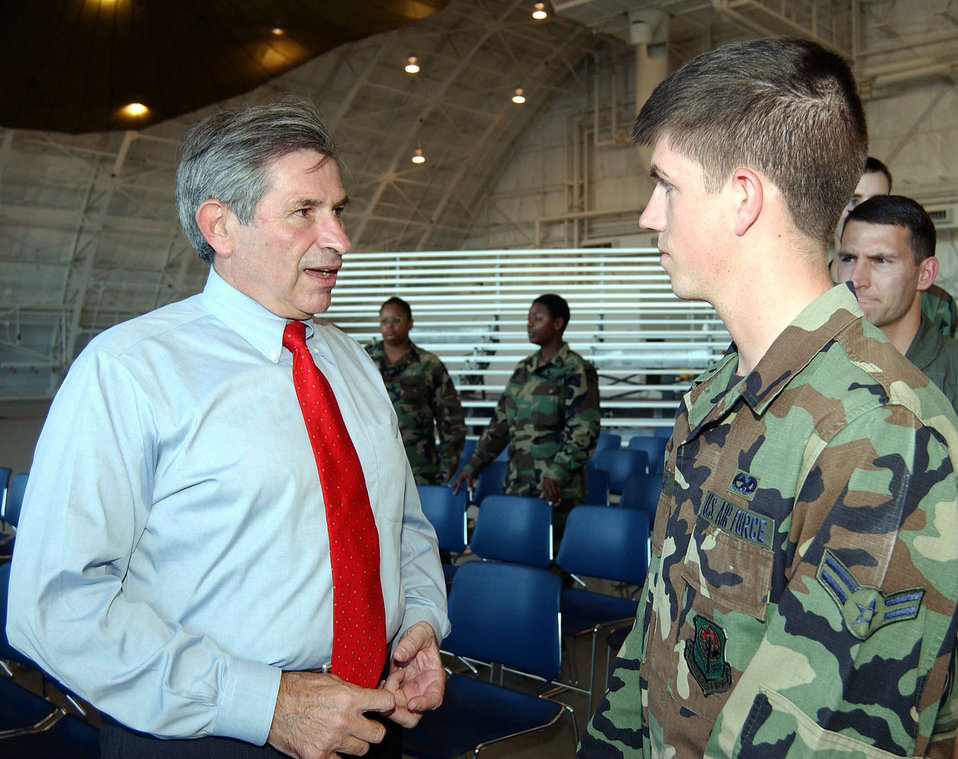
Talking about the issues

MCCHORD AIR FORCE BASE, Wash. -- Airman 1st Class John Harms speaks with Deputy Defense Secretary Paul Wolfowitz here July 23 about current military issues. Airman Harms is assigned to the base's 62nd Maintenance Squadron.